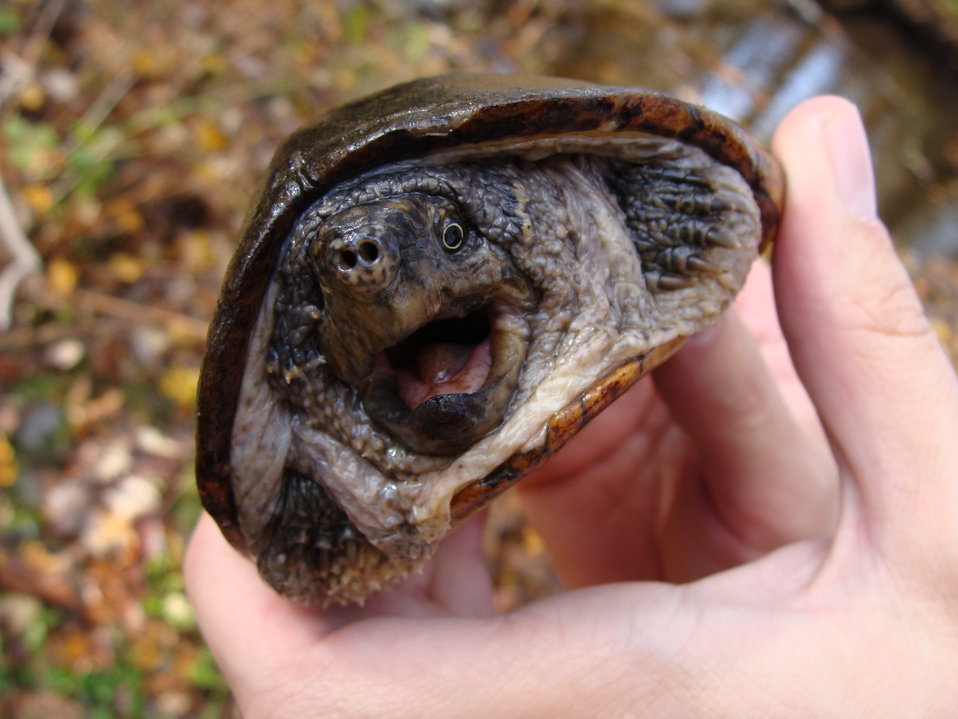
Common Musk Turtle

Annoyed Common musk turtle at Great Swamp National Wildlife Refuge